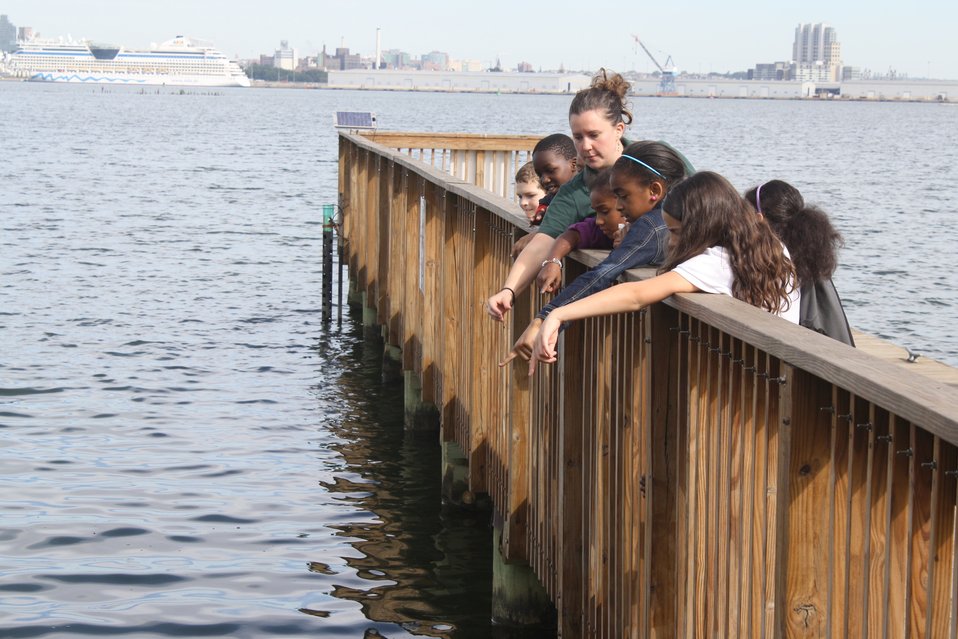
School students

Students at Curtis Bay Elementary School participate in environmental education programs at Masonville Cove led by the Living Classrooms Foundation.